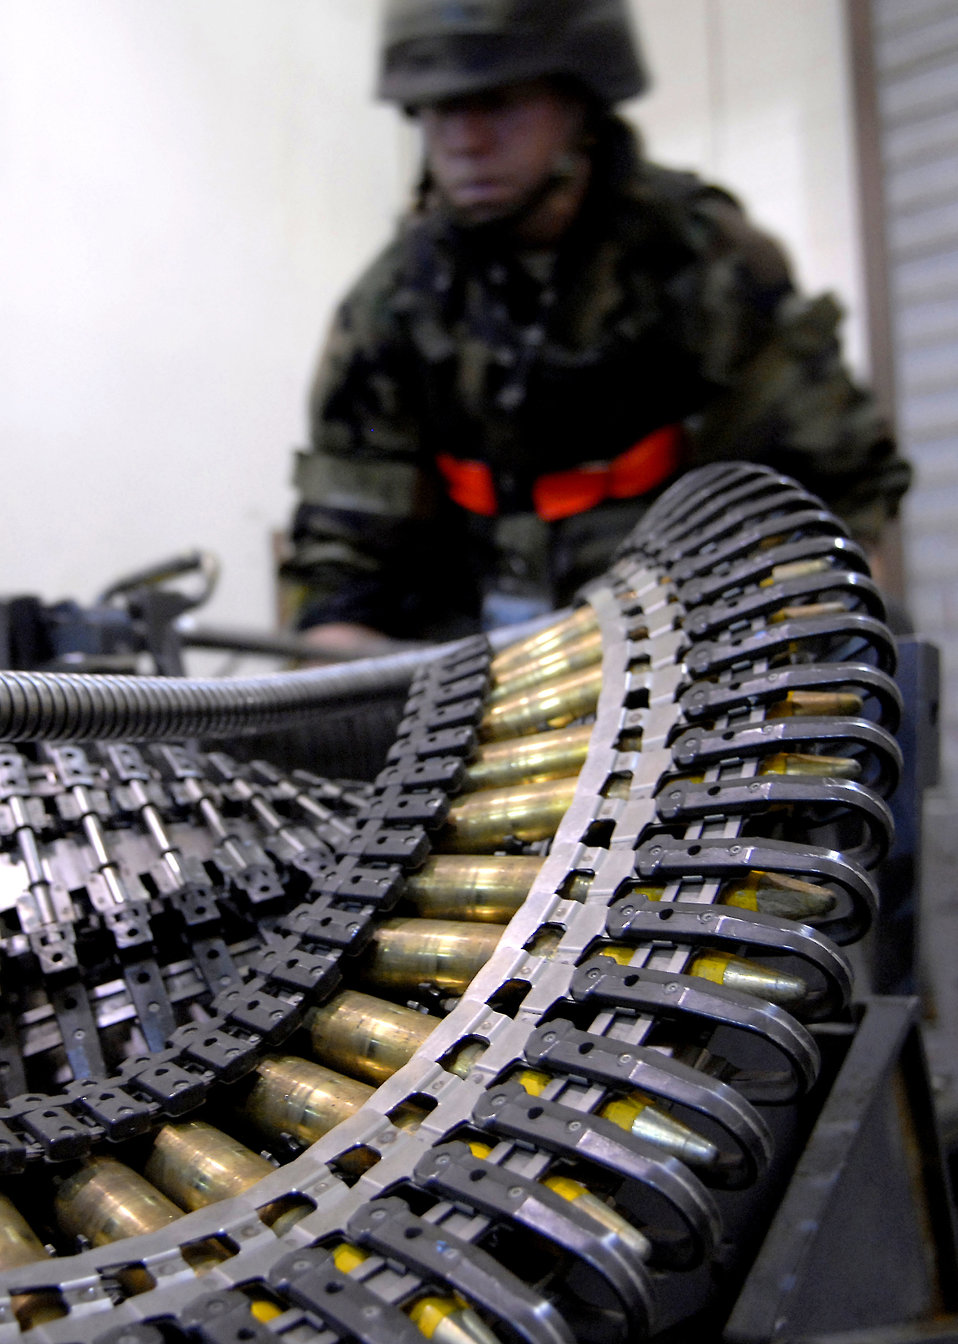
Round and around

More than 4,000 20mm rounds are loaded into a universal ammunition loading system for an F-16 Fighting Falcon April 20 during an operational readiness inspection at Osan Air Base, South Korea. ORIs are conducted to evaluate the ability of units with wartime, contingency or force sustainment missions.